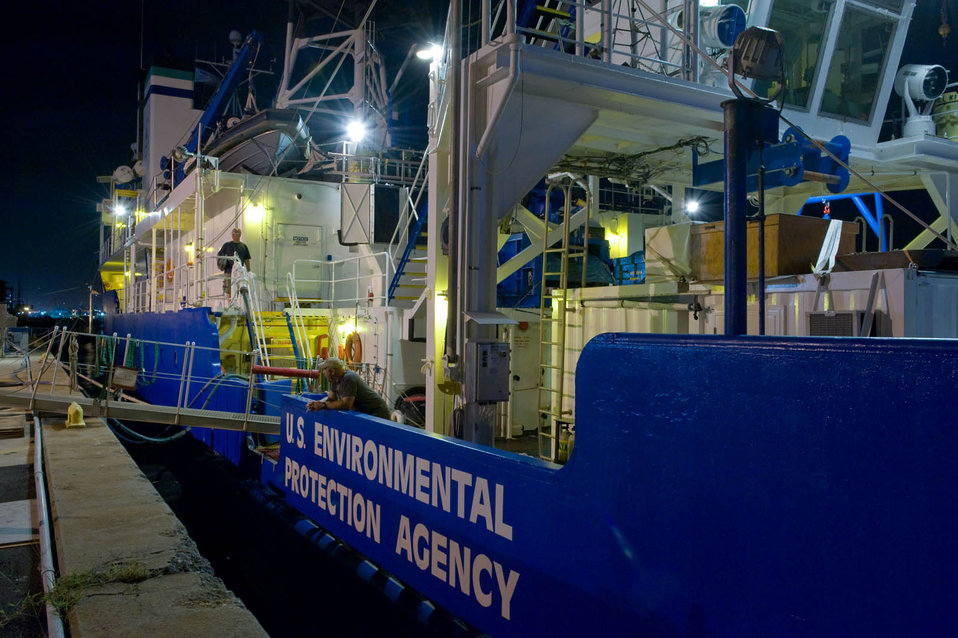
OSV Bold in Norfolk, VA.